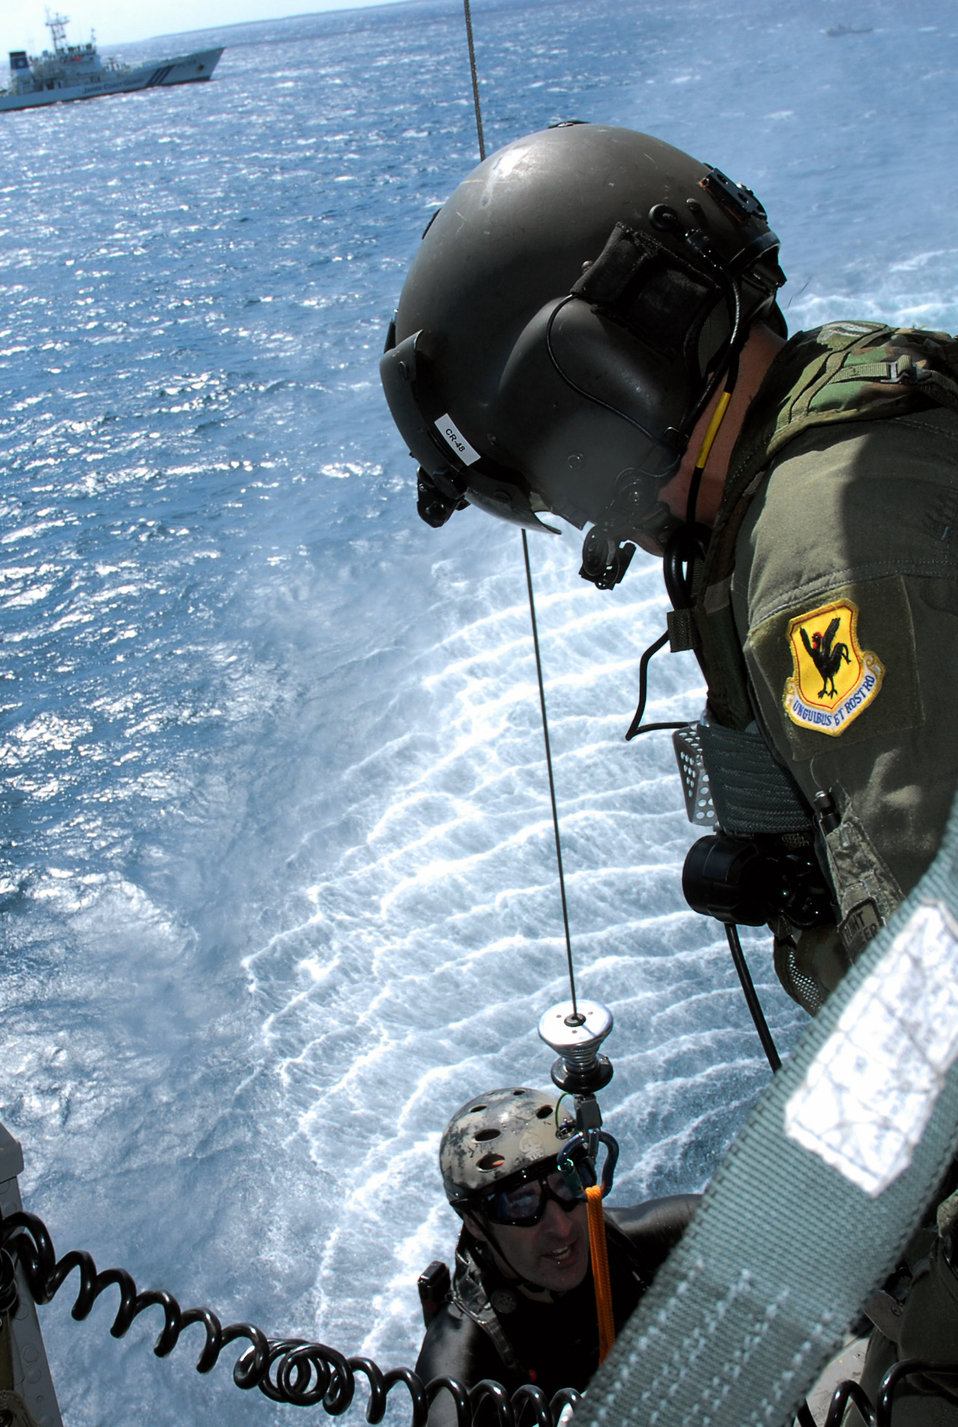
To the rescue

Staff Sgt. Jonathan Courtright is hoisted up onboard an HH-60G Pave Hawk by Master Sgt. Ernest Garcia after rescuing a downed F-15 Eagle pilot as part of a crisis management exercise Oct. 8 off the coast of Okinawa, Japan. Members of the 18th Wing from Kadena Air Base, Japan, and the Japanese coast guard rehearsed response procedures for a simulated over the water aircraft accident. Sergeant Courtright is a pararescue Airman assigned to the 31st Rescue Squadron, and Sergeant Garcia is a flight engineer assigned to the 33rd Rescue Squadron.